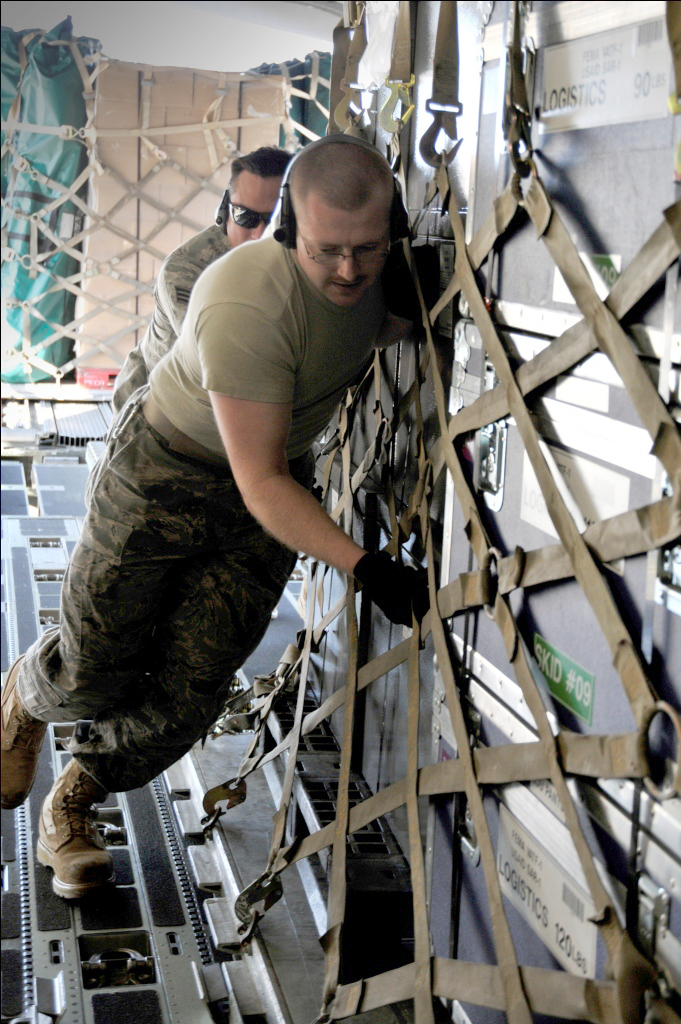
Mobility Airmen

Airmen from the 89th Aerial Port Squadron load pallets onto a C-17 Globemaster III March 12, 2011, at Joint Base Andrews, Md. Air transportation Airmen prepared 14 pallets of technical search-and-rescue gear, including inflatable swift-water rescue boats, generators, trench rescue and cutting equipment. The gear is being transported by C-17 to provide assistance after an earthquake and tsunami hit Japan March 11, 2011.